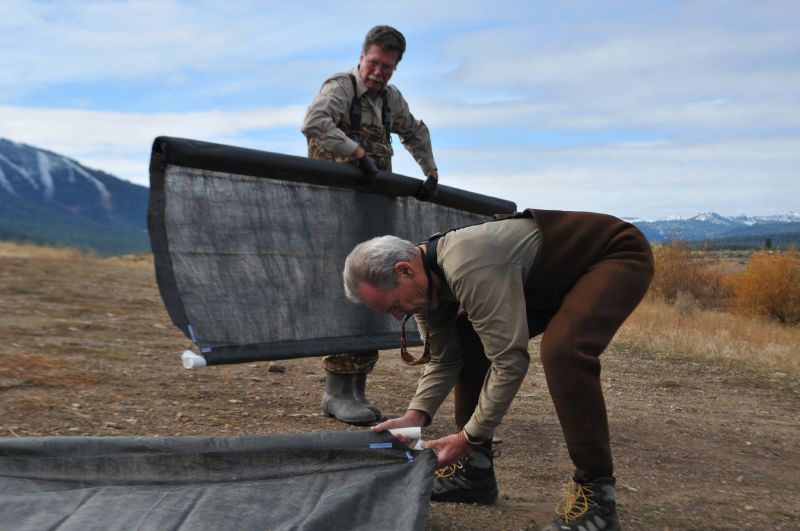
MARTIS CREEK LAKE, Calif. (Oct. 31, 2010) - Volunteers assemble sunlight barriers here Oct. 31 as part of a project to eradicate invasive Eurasian milfoil plants from the lake bottom. The gas-permeable barriers kill the milfoil plants by blocking sunlight, but don't disturb other plant and animal species native to the lake. The Corps is partnering with the Tahoe Divers Conservancy on the project, funded by a $20,000 grant from the Community Foundation of Western Nevada's Truckee River Fund.